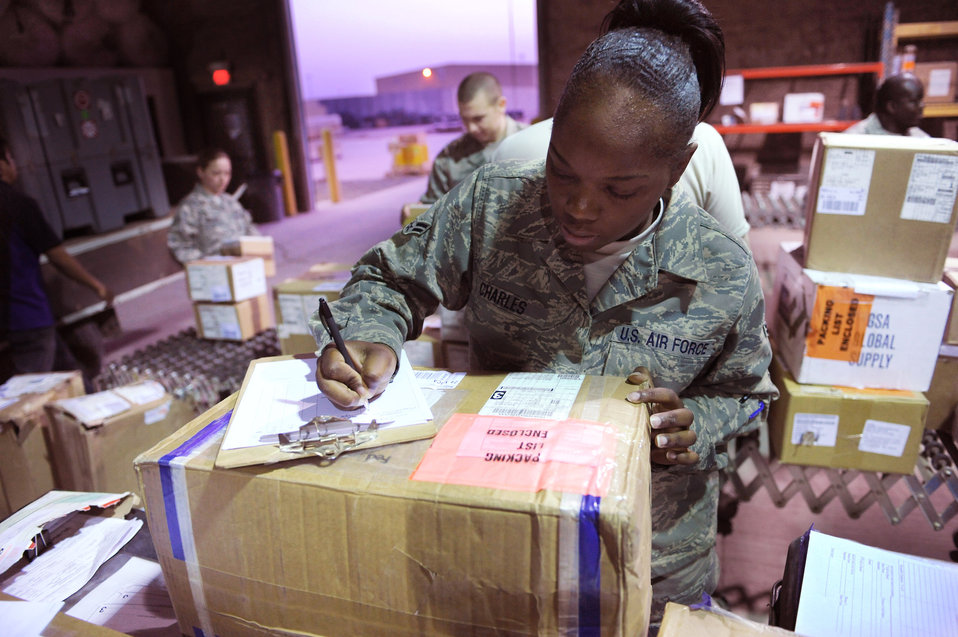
Making a list and checking it twice

Airman 1st Class Jasmine Charles in-checks cargo Feb. 17 at Joint Base Balad, Iraq. The traffic management office is responsible for in-checking Air Force cargo from five parcel carriers. She is a 332nd Expeditionary Logistics Readiness Squadron traffic management apprentice deployed from Minot Air Force Base, S.D. Airman Charles is a native of Seattle.